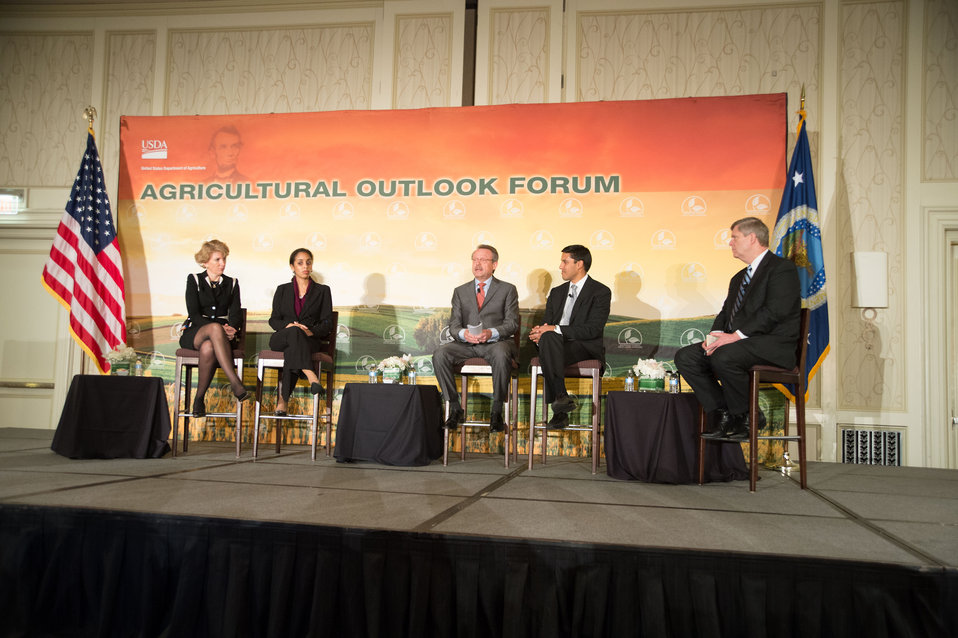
Agriculture Secretary Tom Vilsack moderates the plenary panel on Building Markets Here and Abroad at the 2014 Agricultural Outlook Forum in Arlington, VA., on Thursday, Feb. 20, 2014. (L to R Produce Marketing Association President Cathy Burns, Mercaris Founder and Chief Executive Officer Kellee James, DuPont Pioneer President Paul Schickler, U.S. Agency for International Development (USAID) Administrator Rajiv Shah, and Agriculture Secretary Tom Vilsack). The U.S. Department of Agriculture's (USDA) annual Agricultural Outlook Forum brings together the agricultural community to discuss policy, trade, science, rural development, and the economic outlook for the coming year. The Forum also focuses on forestry, health and nutrition issues, and the changing dynamics and face of rural America.USDA photo by Bob Nichols.